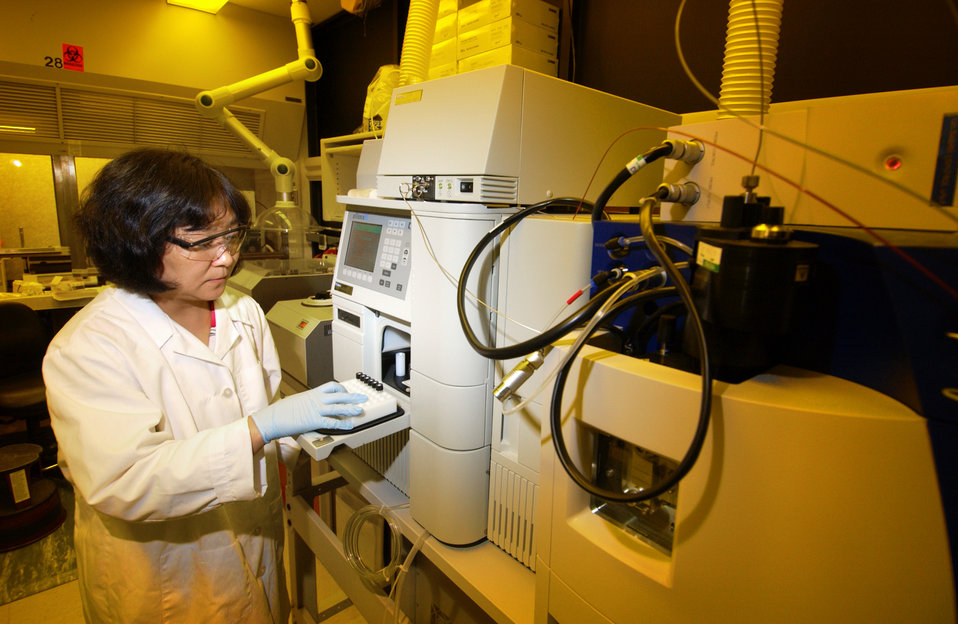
This 2004 photograph showed CDC research biologist Hui Ping Chen, preparing a High Performance Liquid Chromatography (HPLC) instrument in order to analyze the concentrations of fat-soluble vitamins in a serum sample in the Personal Care Products Laboratory (PCPL) located in a CDC lab on the organization's Chamblee, Georgia campus.